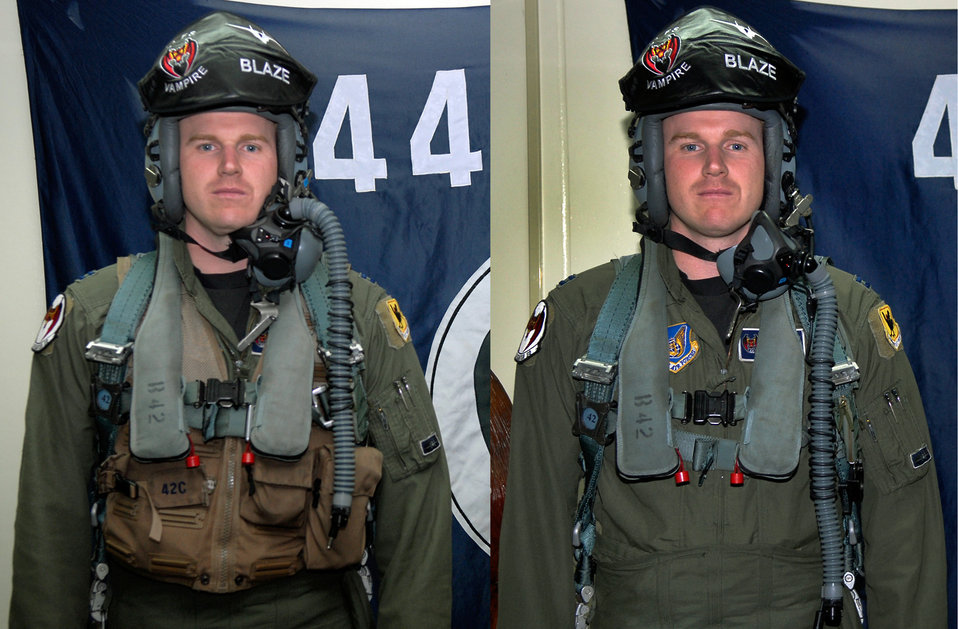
AFSO21 makes improvements for AF

Capt. Glen Whelan displays the survival vest worn by pilots before (left) and after (right) Air Force Smart Operations for the 21st Century changes were implemented. The modification was made due to the increased weight of the vests over the last eight years and eliminated duplicate items already found in cockpits. Captain Whelan is an F-15 Eagle pilot assigned to the 44th Fighter Squadron.